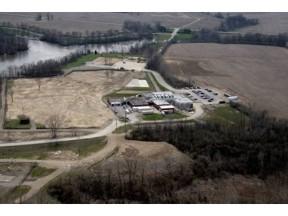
Columbus Site

An aerial photo of the Columbus Site located in Ohio after cleanup operations have been completed. DOE returned 31 acres at the Columbus Site to the owner, Battelle Memorial Institute, for unrestricted industrial reuse.